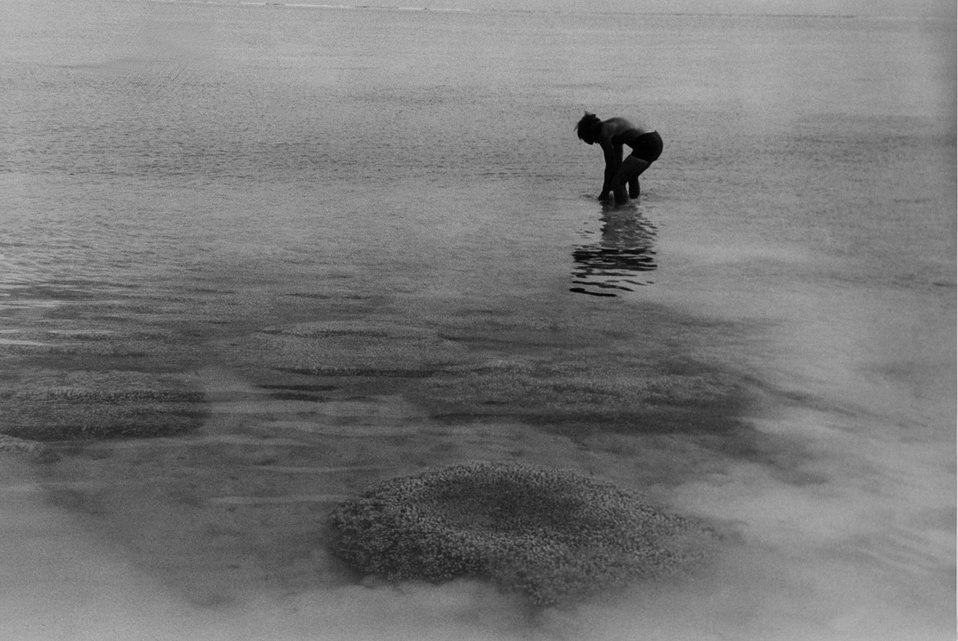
Six years after nuclear testing scientist evaluate the condition of the Bikini Islands.